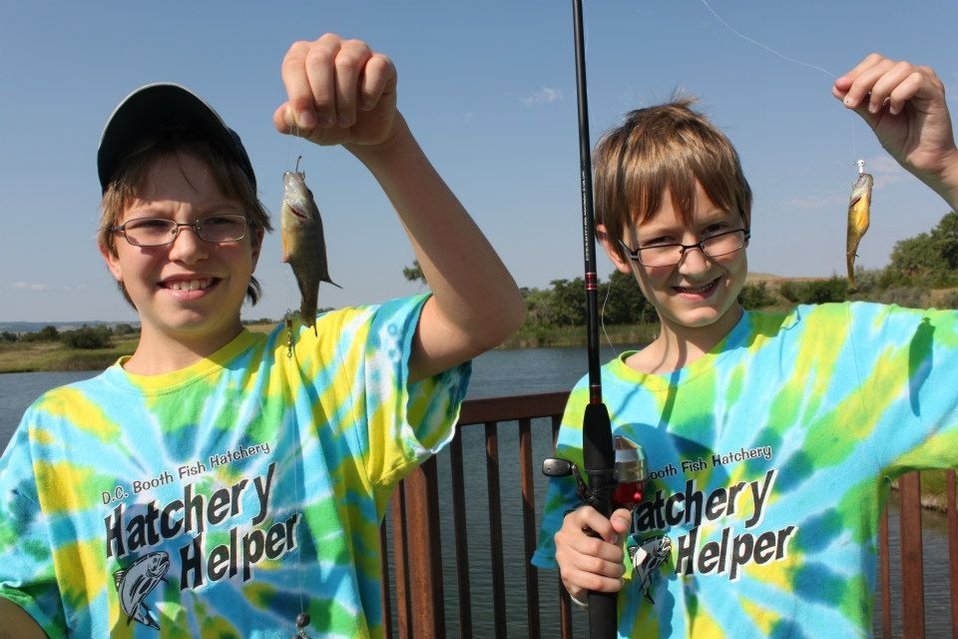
Two proud Hatchery Helpers show off their catch on fishing day!